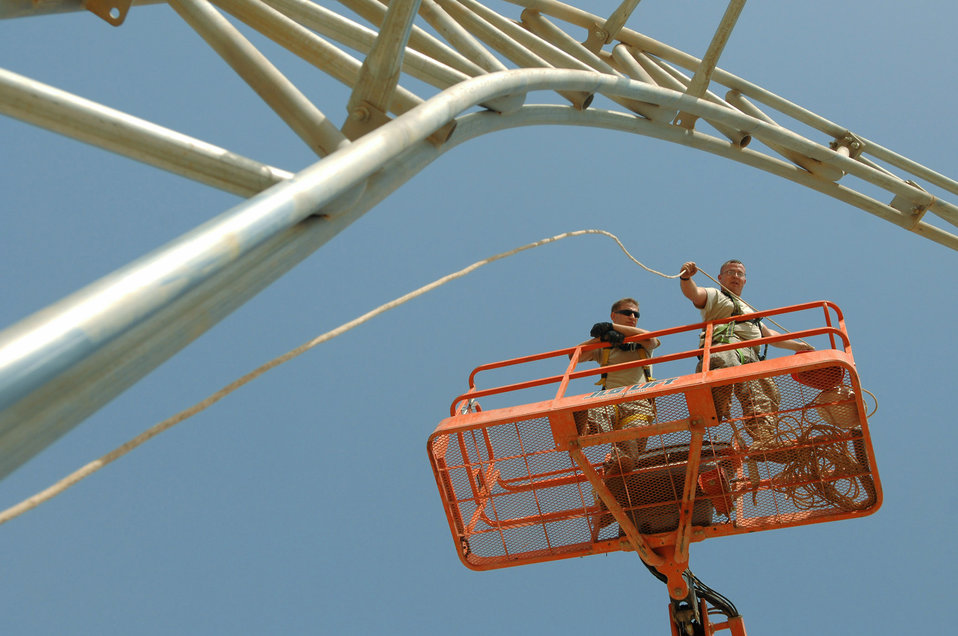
Watch out, below!

Staff Sgt. Karl Ferree raises a lead rope May 7 over the skeleton of a big top shelter at Balad Air Base, Iraq. Sergeant Ferree is deployed from Luke Air Force Base, Ariz.